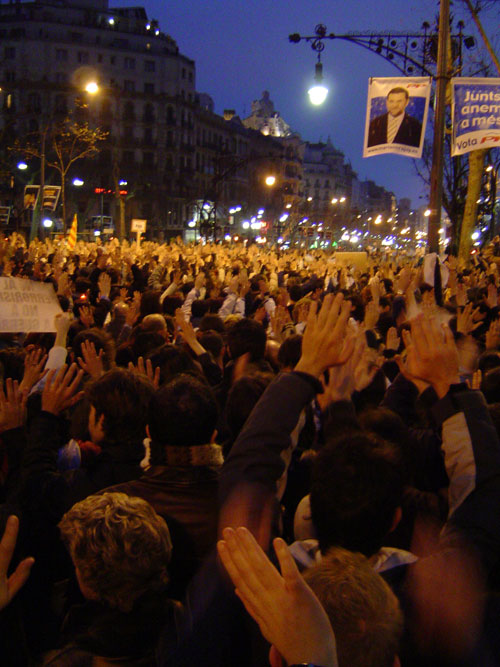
Français : Manif de barcelone contre les atentats du 11 mars 2004